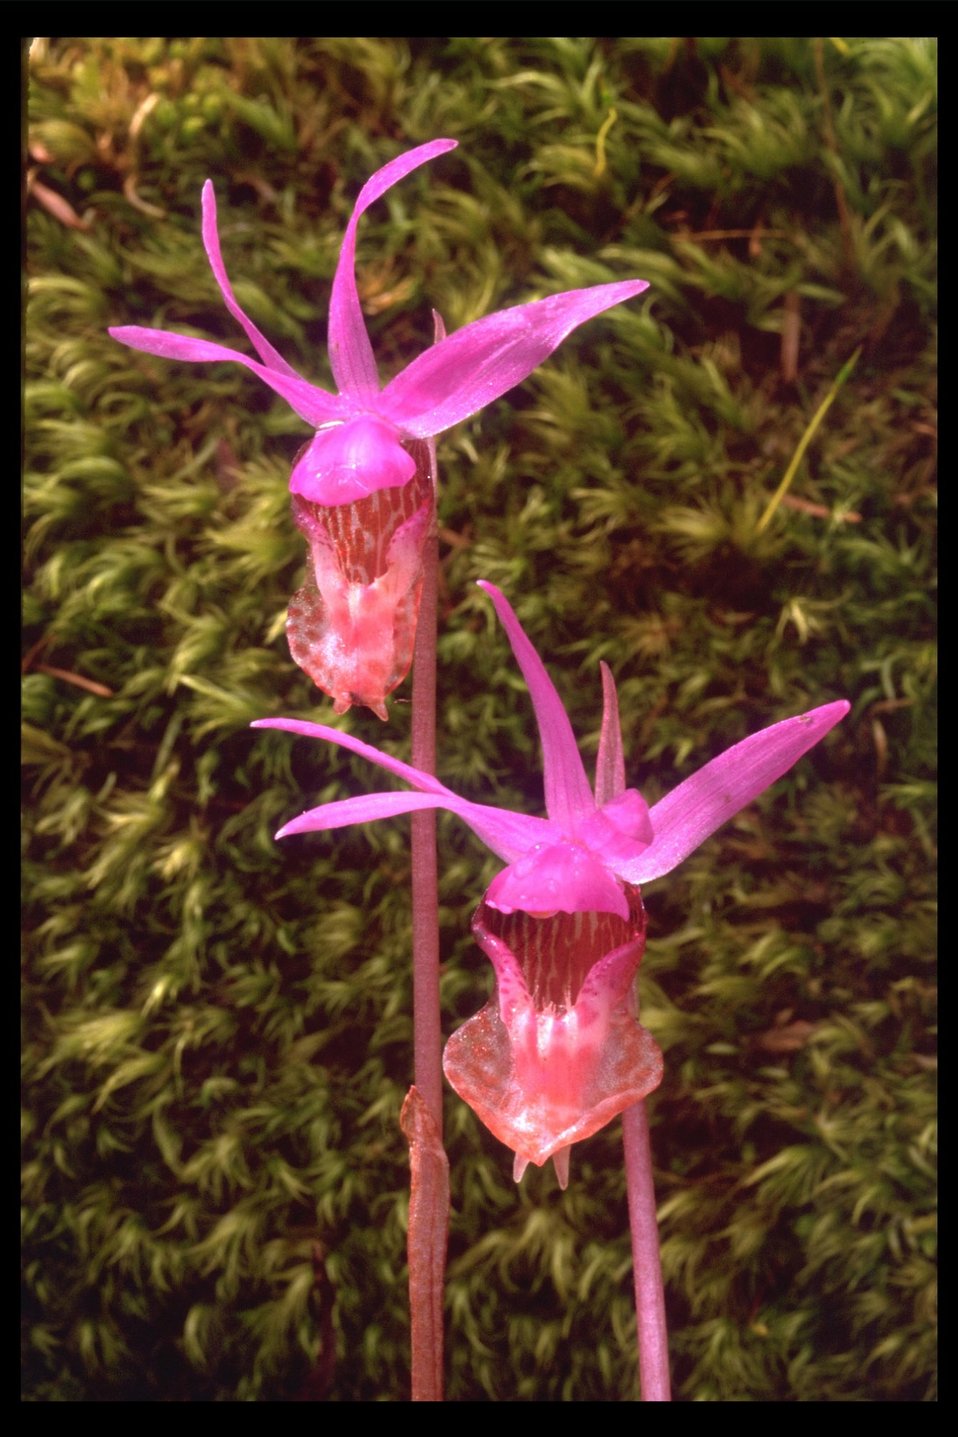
Fairy Slipper, also called the Calypso Orchid, (Calypso bulbosa) found along Twincheria Creek east of Butte Falls.